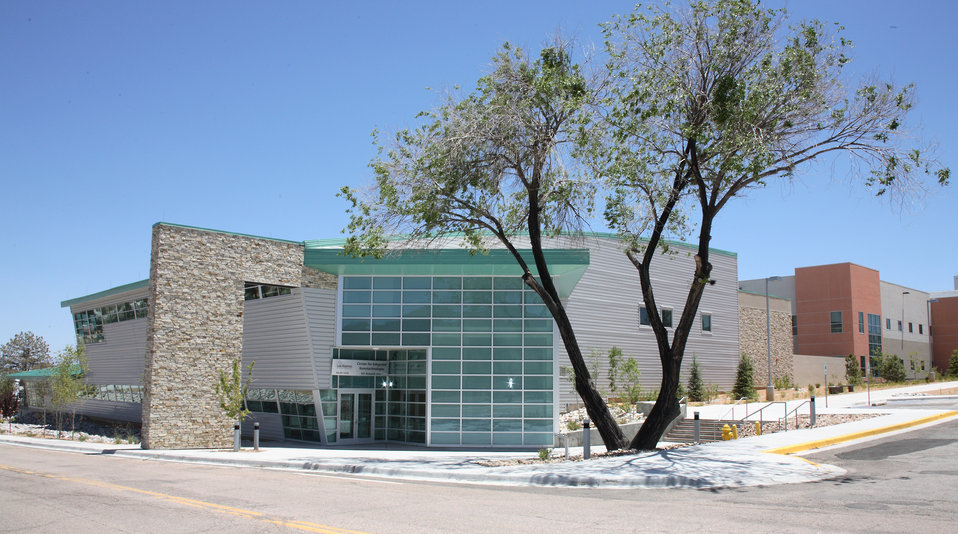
CINT IS PART IF SCIENCE NANOSCALE SCIENCE RESEARCH CENTER (NSRC) OPERATING AS A USER FACILITY - SCIENTIFIC PRINCIPLES THAT GOVERN THE DESIGN, PERFORMANCE INTEGRATION OF NANOSCALE MATERIALS.

CINT IS ONE OF THE LIVE NSRC'S THROUGHOUT THE U.S. THAT FORM AN INTEGRATED NATIONAL PROGRAM, AFFILIATED WITH MAJOR FACILITIES AT THE DOE'S NATIONAL LABORATORIES, TO COVER THE DIVERSE ASPECTS OF NANOSCIENCE AND TECHNOLOGY. THIS COMPLEX ASPIRES TO BECOME A CORNERSTONE OF THE NATION'S NANOTECHNOLOGY REVOLUTION, CONTRIBUTING TO DOE'S PRINCIPAL MISSIONS IN NATIONAL DEFENSE, ENERGY AND TEH ENVIRONMENT WHILE PROVIDING AN INVALUABLE RESORCE FOR UNIVERSITIES AND INDUSTRIES. IT'S CORE FACILITY LOCATED IN ALBUQUERQUE AND GATEWAY UNIVERSITIES AND INDUSTRIES. IT'S CORE FACILITY LOCATED IN ALBUQUERQUE AND GATEWAY FACILITIES AT LOS ALAMOS AND SANDIA NATIONAL LABORATORIES. CINTS PROVIDED OPEN ACCESS TO TOOLS AND EXPERTISE NEEDED TO EXPLORE THE CONTINUUM FROM SCIENTIFIC DISCOVERY TO THE INTEGRATION OF NANOSTRUCTURES INTO THE MICRO AND MACRO WORLD.